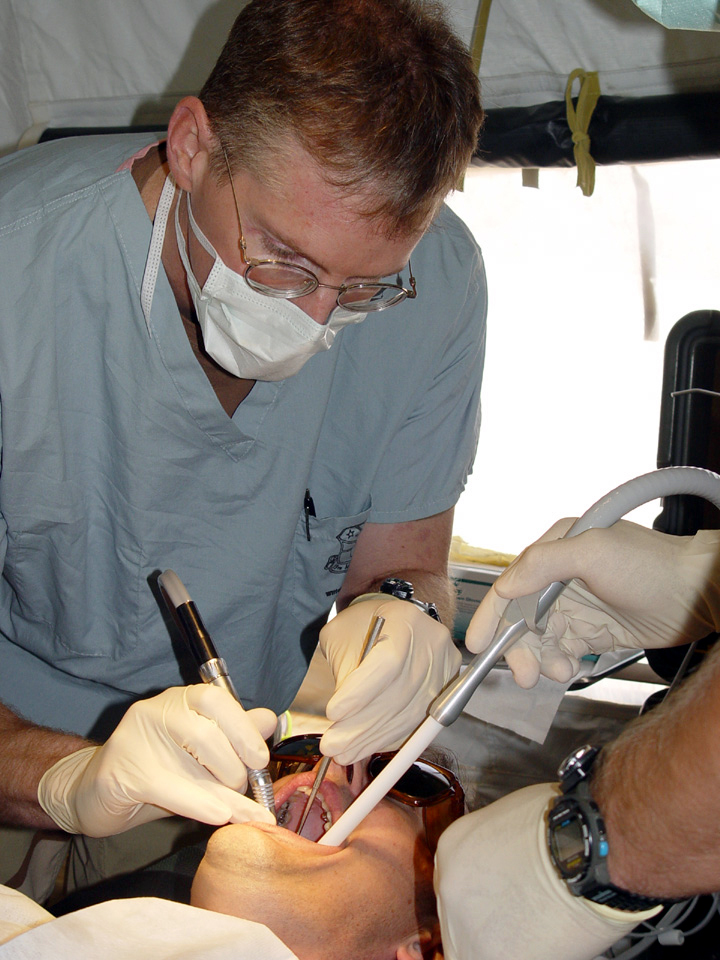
Deployed dental

OPERATION IRAQI FREEDOM -- Lt. Col. (Dr.) Alan Sutton treats a patient at the newly opened dental clinic at a forward-deployed location. Sutton is the sole member of the dental flight serving the 380th Air Expeditionary Wing. He is deployed from Lackland Air Force Base, Texas.